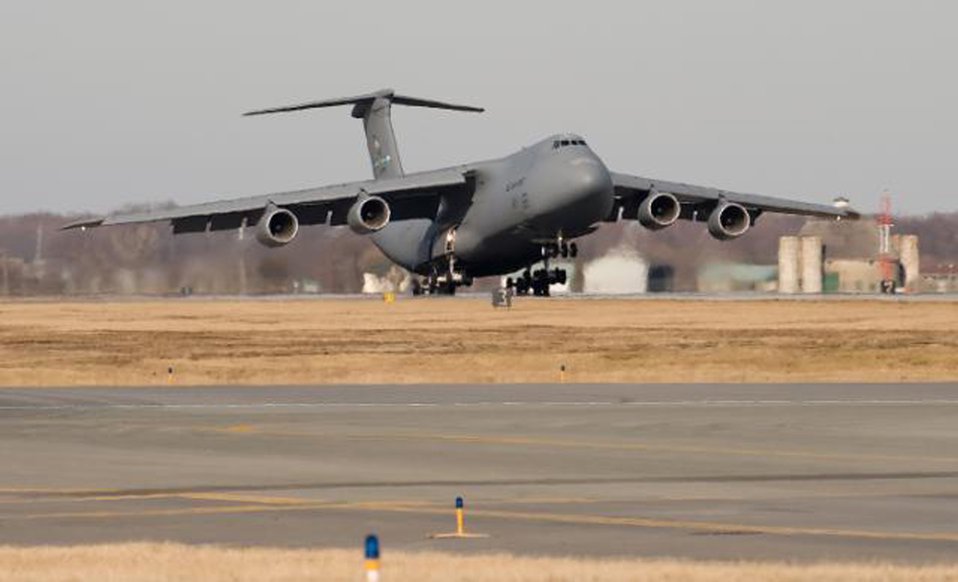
The Spirit of Global Reach

Team Dover's first C-5M Super Galaxy, the Spirit of Global Reach, lands at Dover Air Force Base, Del., Feb. 9. Gen. Arthur Lichte, Air Mobility Command commander, was the delivery official.